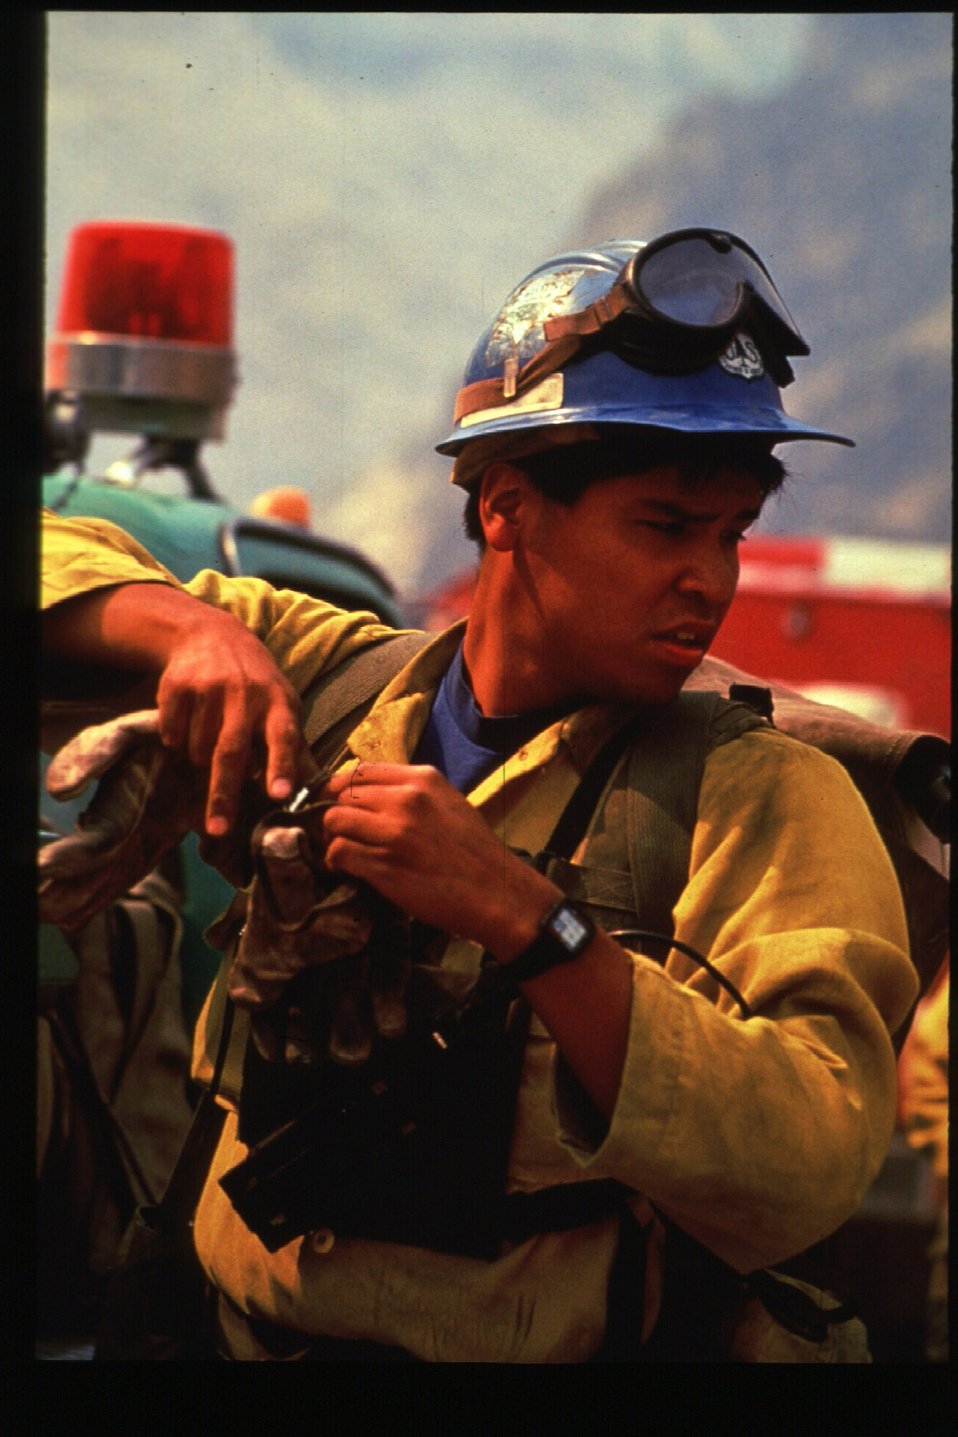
Boise Foothills Fire Danskin Mountains and South Fork of Boise River Wild Fire Fighter Four River Field Office LSRD Lower Snake River District